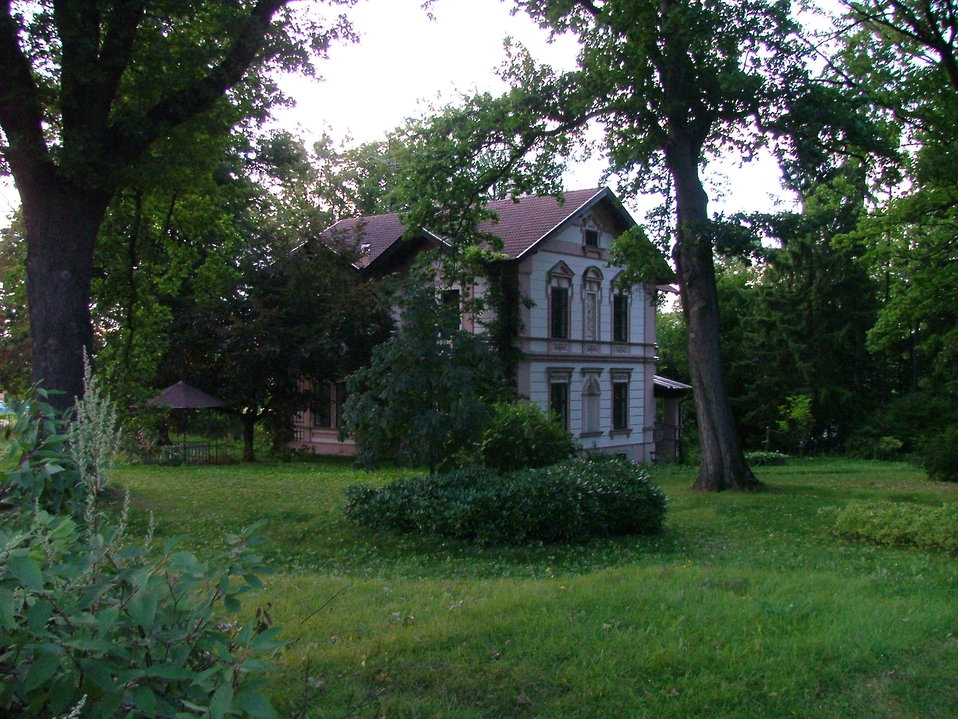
Čeština: Vila, kterou si dr. August Zátka nechal postavit v Libníči u Českých Budějovic